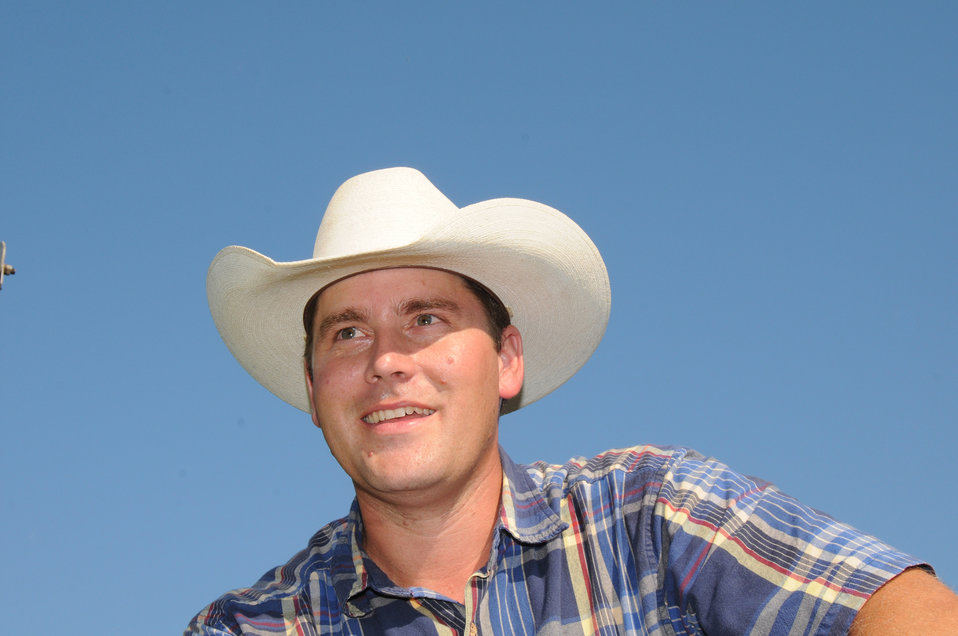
New young farmer Steve Burris looks out over his farm on August 13, 2009. Burris has always been a strong believer that farms should remain in the family, passed down from generation to generation. His conviction became a reality for his own family recently when his father-in-law decided to retire after 69 years, and to sell Burris the property his family had grown up on and farmed. Burris decided to apply at his local U.S. Department of Agriculture (USDA) Farm Service Agency (FSA) county office in McLoud, Oklahoma for both a Beginning Farmer and Rancher Direct Operating Loan (DOL) and Ownership Loan (OL). Due to the passage of the American Recovery and Reinvestment Act (ARRA) Burris received his loan in record time. The DOL helped him purchase the existing farm equipment, including a tractor and creep feeder, from his father-in-law and to pay off the remaining debt he held on the farm equipment he already owned. He purchased 65 cows from a private seller in a neighboring town and the loan allowed him to use some of his personal savings to purchase feed, and fertilizer for his winter wheat crop from a local vender. Burris’s OL was also approved, which enabled him to purchase the farm's existing home and 55 acres from his father-in-law. Burris was a high school agricultural education instructor for seven years, having earned his bachelors degree in agriculture science from Oklahoma State University. He is happy to be more involved in daily farming and splits his time breeding cattle with his wife Kathy and four children, and working as an agent for the local Farmer's Insurance Group office.